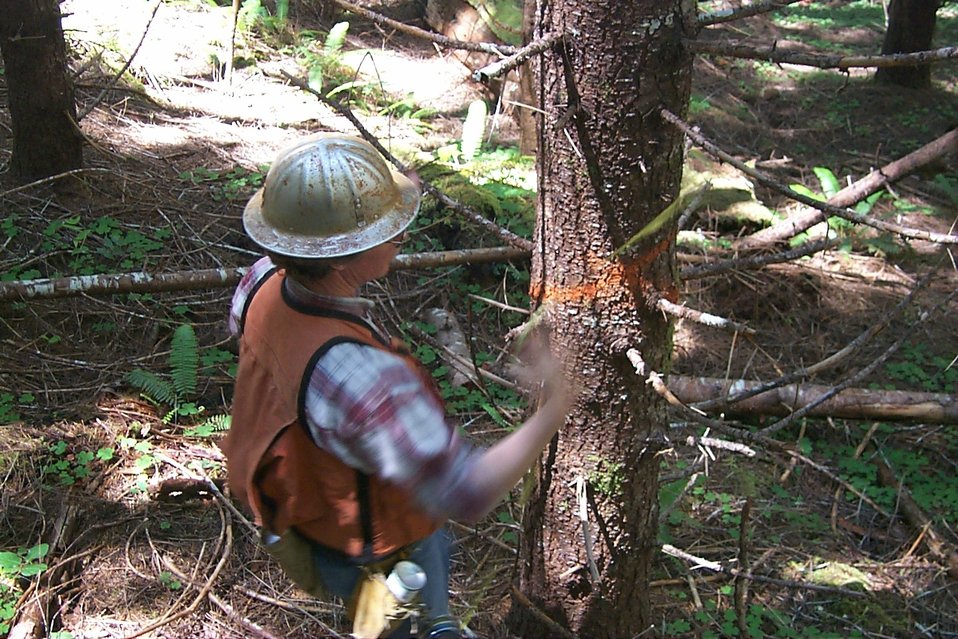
Kevin Dow marking trees in the Camas East Timber Sale.